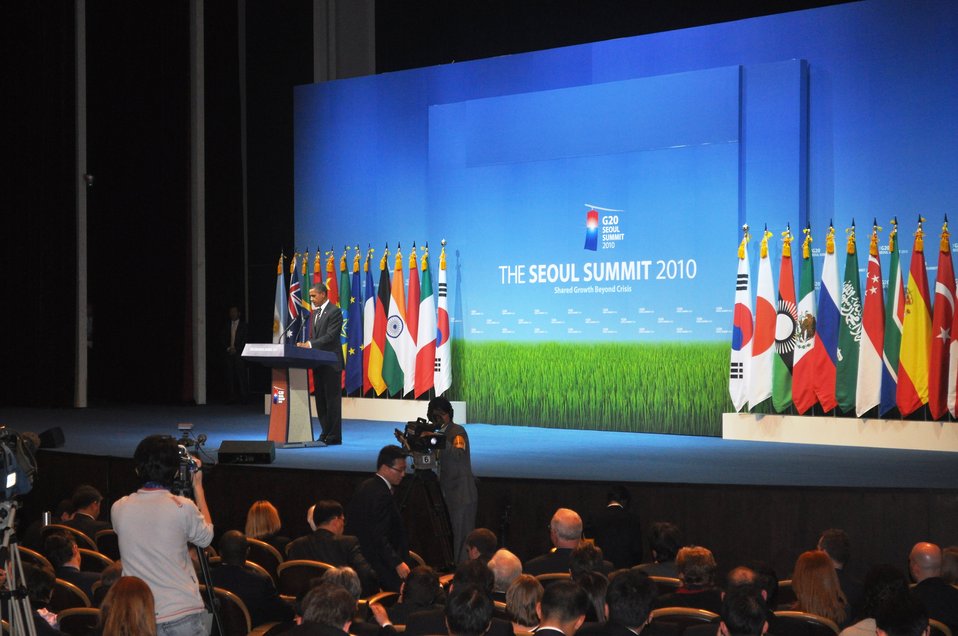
Geithner visit to Asia, November 4-12, 2010

President Obama speaking at the G-20 Summit in Seoul, South Korea.